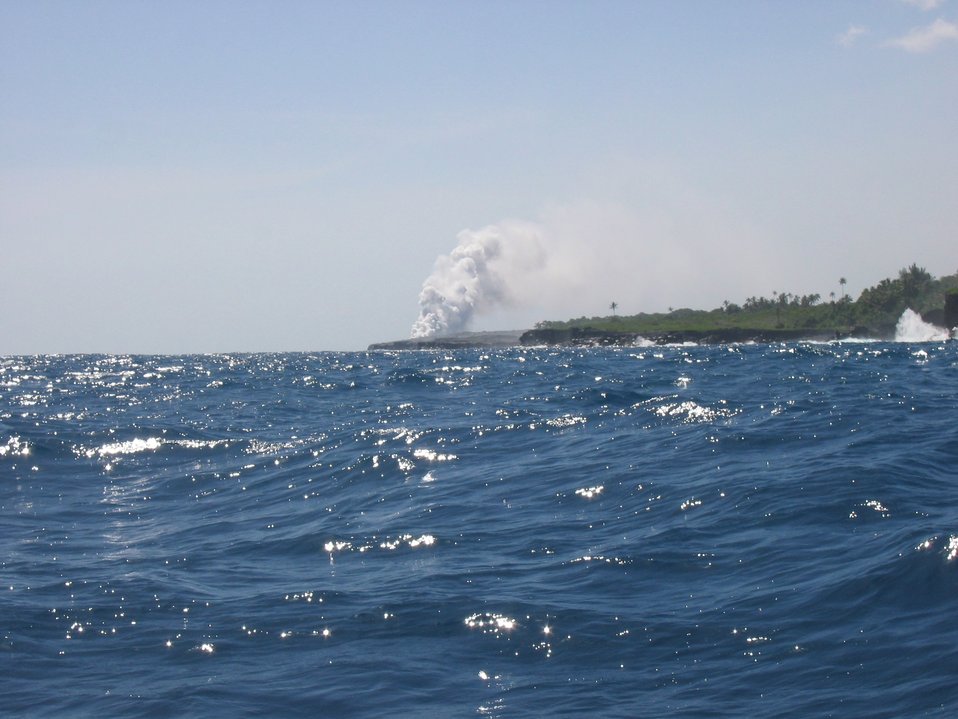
Lava flow entering the sea on SE coast of Hawaii.